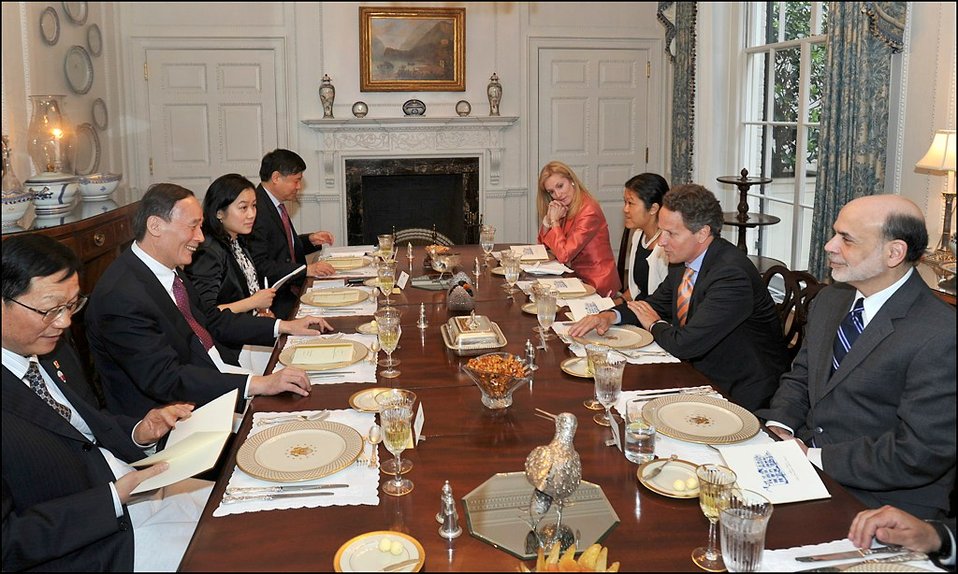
U.S.-China Strategic and Economic Dialogue

Treasury Secretary Tim Geithner hosted a working dinner for Vice Premier Wang Qishan and U.S. and Chinese officials before the official start of the third meeting of the U.S.-China Strategic and Economic Dialogue.